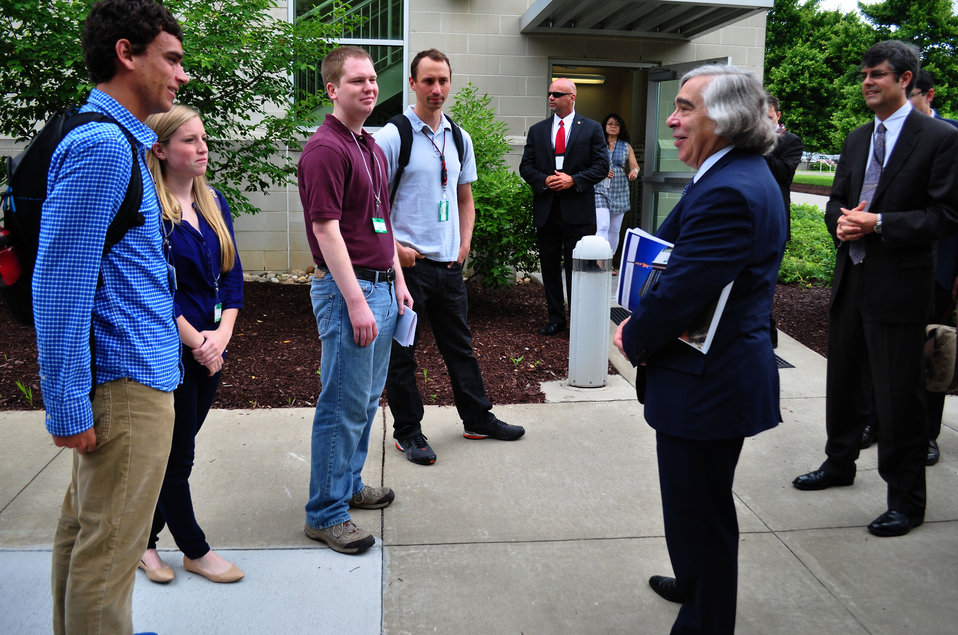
DOE Secretary of Energy Ernest Moniz in Oak Ridge

13-067 DOE photo Lynn Freeny 6-3-2013 Oak Ridge Tennessee